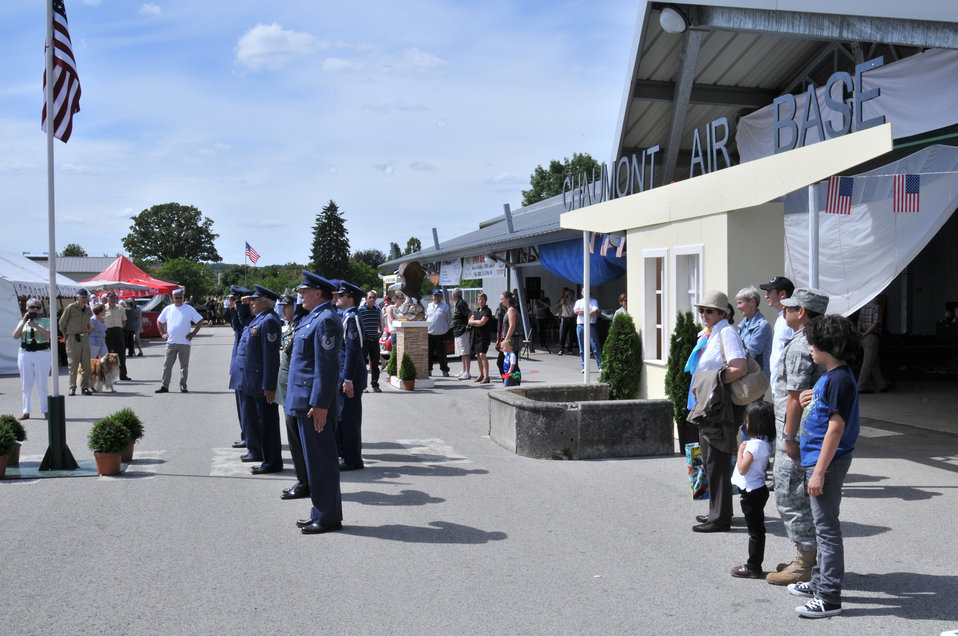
French citizens hold exhibition honoring 48th Fighter Bomber Wing

French citizens dressed in vintage American uniforms perform a flag ceremony June 12, 2011, during an exhibition celebrating the former Chaumont Air Base, in Villiers-Le-Sac, France. The 48th Fighter Bomber Wing operated the base from 1952 to 1967 before moving to Royal Air Force Lakenheath, England.